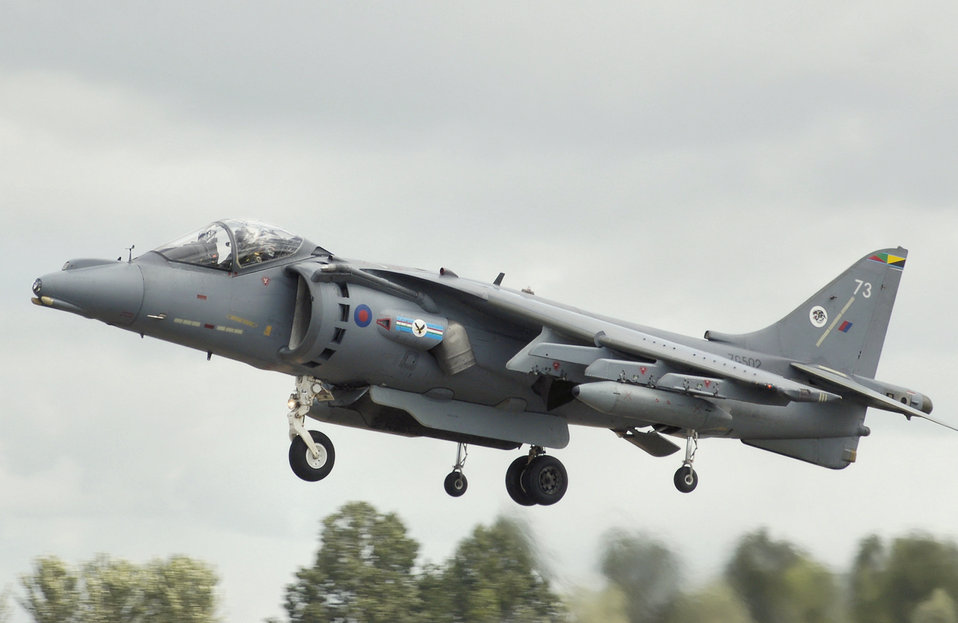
British Aerospace Harrier GR9 (codes ZG502/73) arrives at the 2008 Royal International Air Tattoo, Fairford, Gloucestershire, England, United Kingdom of Great Britain and Northern Ireland.